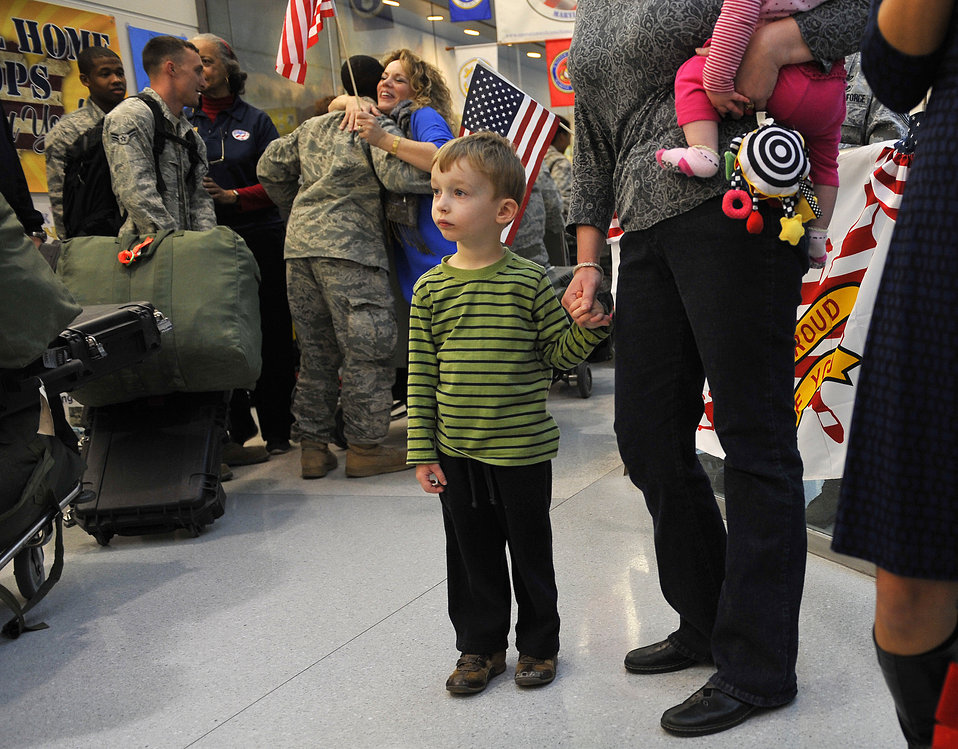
Last Airmen in Iraq return

Connor Vilpors waits to greet his father Dec. 20, 2011, at Baltimore/Washington International Thurgood Marshall Airport in Baltimore, Md. Connor's father, Lt. Col. Steven Vilpors, was deployed to Iraq and was one of the last Airmen to return home from supporting the completed Operation New Dawn.